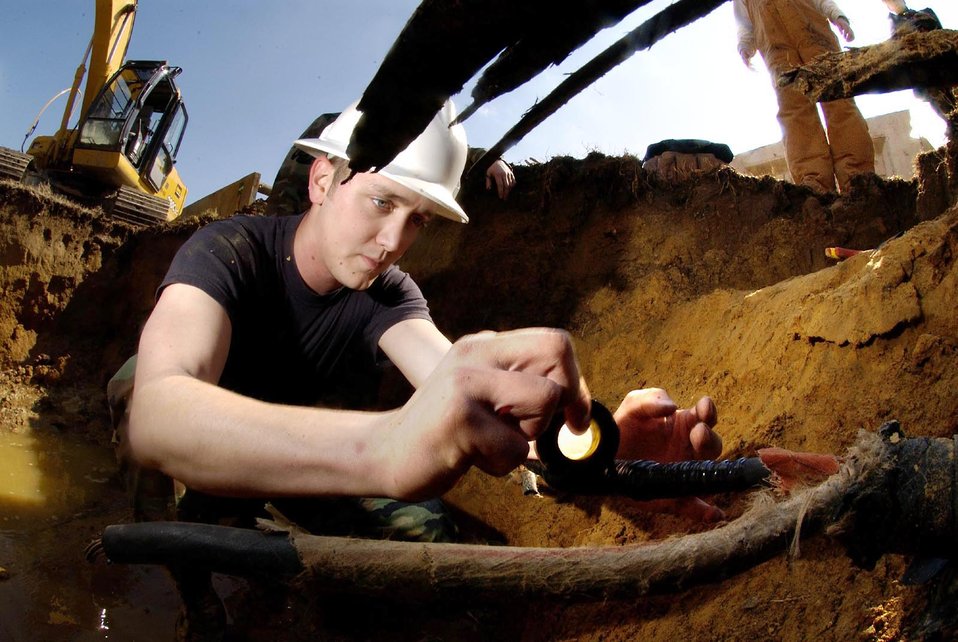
Cable guy

LANGLEY AIR FORCE BASE, Va. -- Airman 1st Class Jeffery Behrick repairs a severed 5,000-volt electric cable to bring a facility's power back online here. He is an electrician assigned to the 1st Civil Engineer Squadron's operations flight.